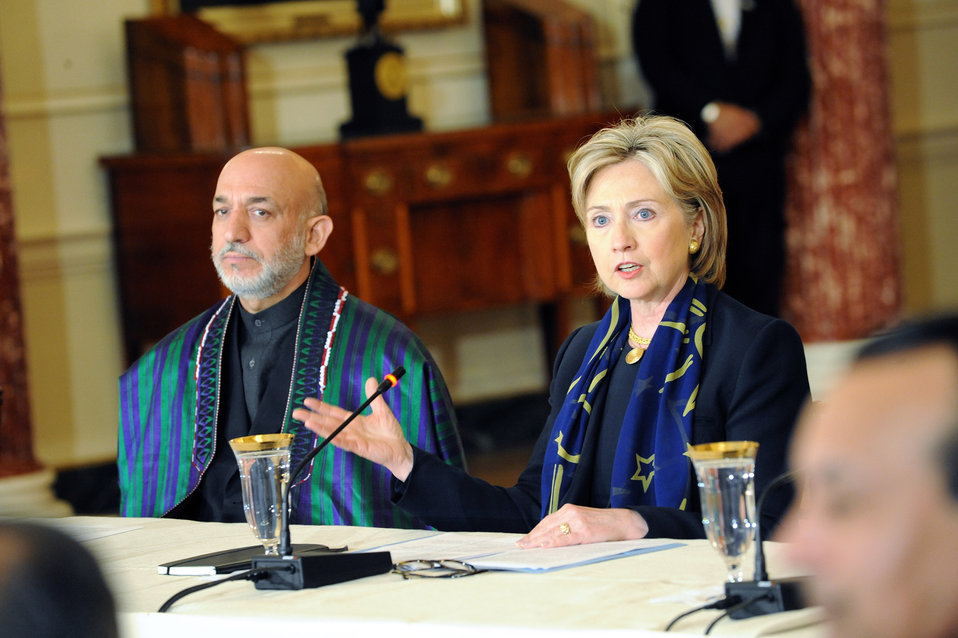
Trilateral Consultations With Afghanistan and Pakistan

U.S. Secretary of State Hillary Rodham Clinton provides remarks during talks with Afghan President Hamid Karzai during trilateral consultations with Afghanistan and Pakistan at the U.S. Department of State in Washington, DC May 6, 2009.